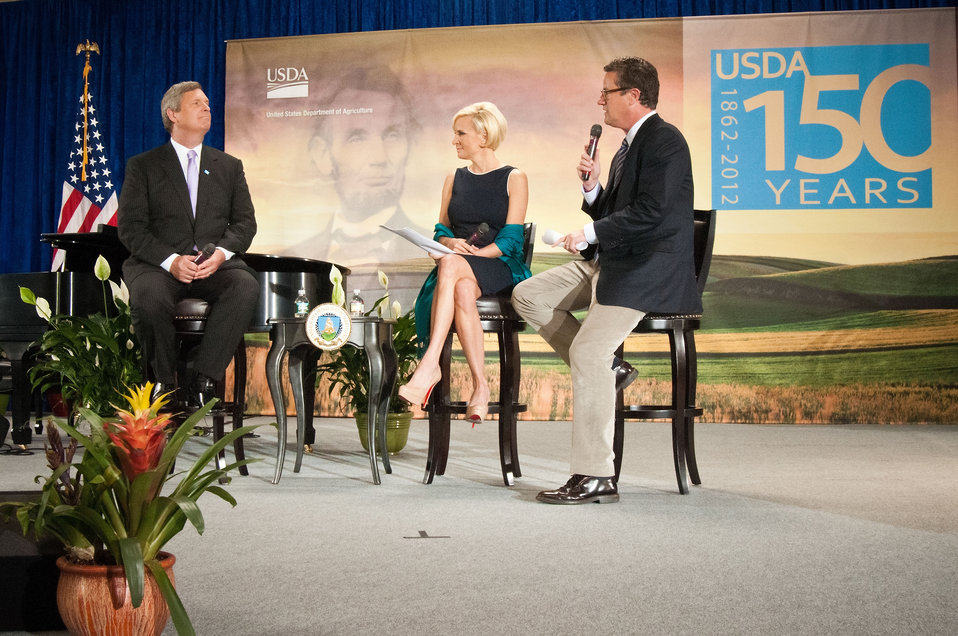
From left Agriculture Secretary Tom Vilsack, Mika Brzezinski and Former Congressman Joe Scarborough (R-Fla.) hosts of MSNBC’s “Morning Joe and Masters of Ceremony listen to Secretary Vilsack explain the history and importance of American agriculture to not only this country but to the world at the United States Department of Agriculture’s 150th Anniversary celebration in Washington, D.C., on Tuesday, May 15, 2012. On May 15, 1862 President Abraham Lincoln signed into law an act of Congress establishing the U.S. Department of Agriculture. Over the next two months - in the midst of the Civil War - he signed additional legislation that expanded and transformed American farming, including the Homestead Act, and the establishment of the Land Grant agricultural university system. President Lincoln referred to the Agriculture Department as the “People’s Department”. President Lincoln knew the importance of agriculture to our prosperity – particularly at a time when about half of all Americans lived on the farm. Today that number stands at about 2 percent. Our values are still rooted in rural America. As the United States has changed and evolved over the years, at USDA we have not lost sight of Lincoln’s vision. Through our work on food, agriculture, economic development, science, natural resource conservation and a host of other issues, USDA has impacted the lives of generations of Americans. Today, USDA truly remains a “Peoples’ Department” that touches the life of every American. People depend on us and USDA is committed to leveraging the efforts of our Department and more than 100,000 hardworking USDA employees to continue creating jobs, supporting rural communities and helping our country prosper.